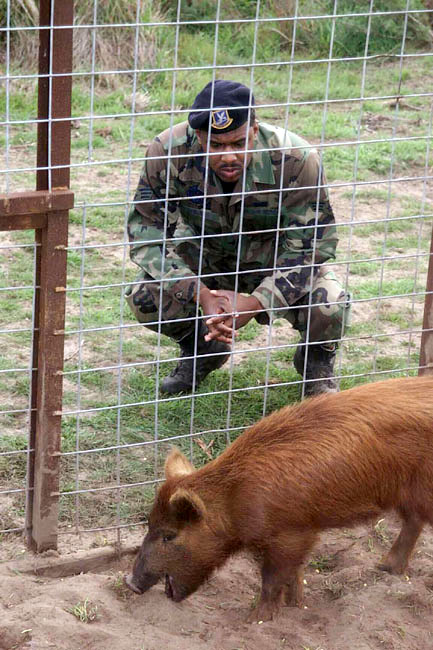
Hunters against hunger

VANDENBERG AIR FORCE BASE, Calif. -- Staff Sgt. Damion McElroy, the 30th Security Forces Squadron game warden here, traps wild pigs on base and donates them to feed the homeless in nearby Lompoc. He started Hunters Against Hunger, a program that gives hunters the opportunity to donate their excess game to feed homeless people.